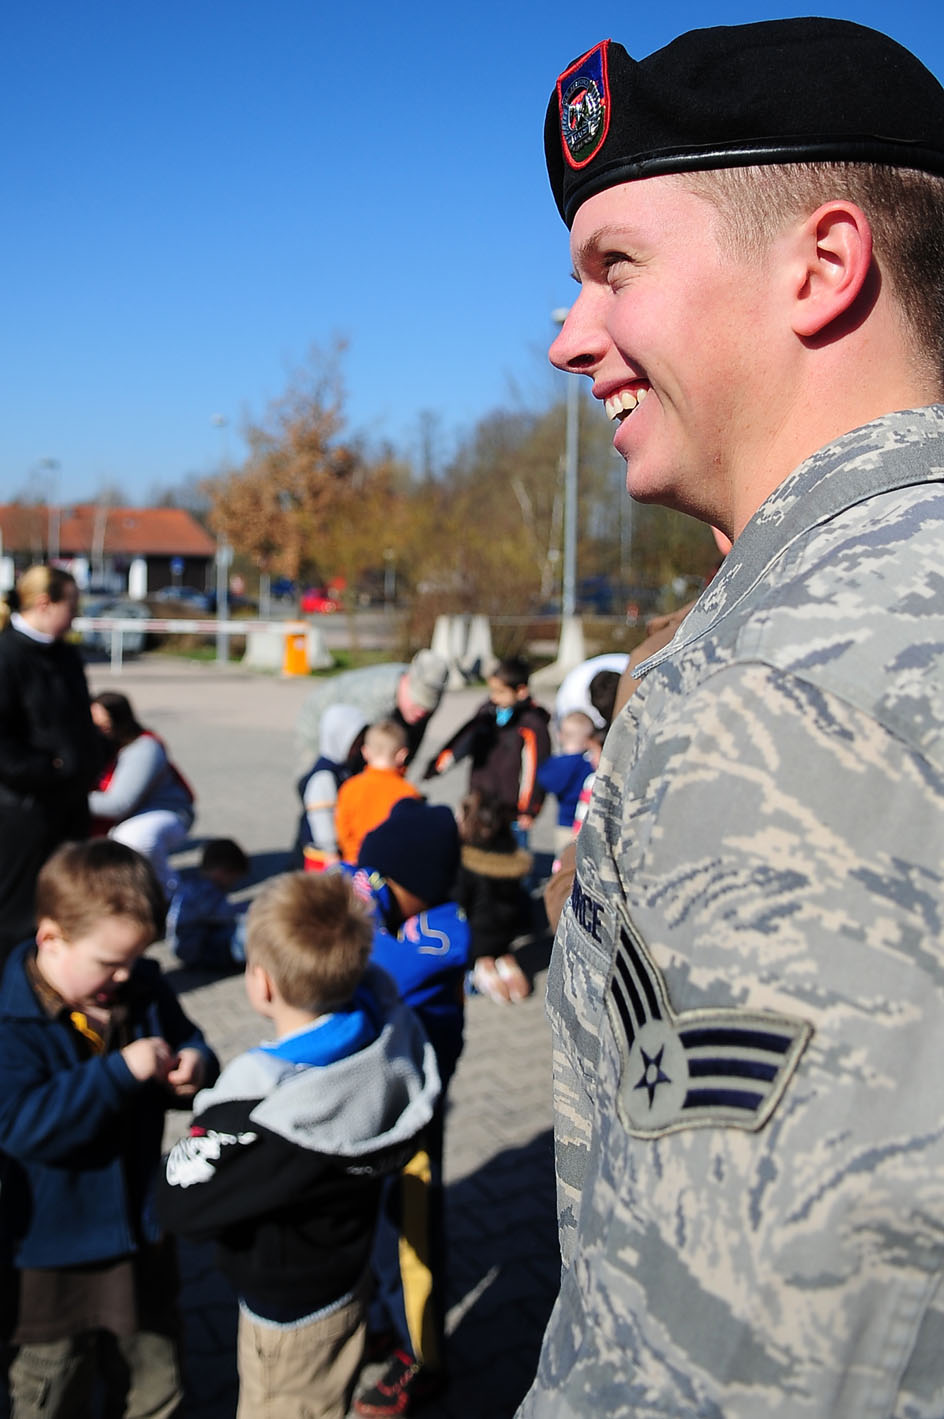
Ramstein Airmen provide 'boot camp' for military children

Senior Airman Truman Smith enjoys a laugh as he volunteers in the child development center's